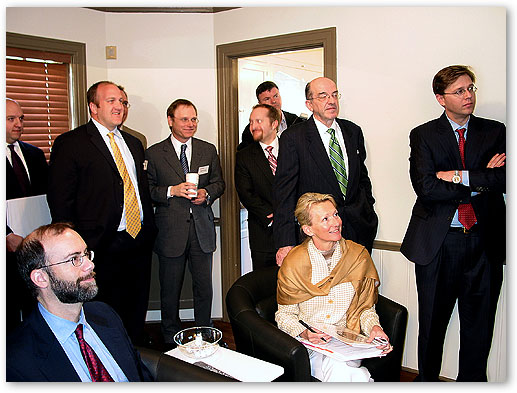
FCC Commissioners and staff view CURRENT Communications Broadband Over Powerline demonstration in Dallas, Texas.